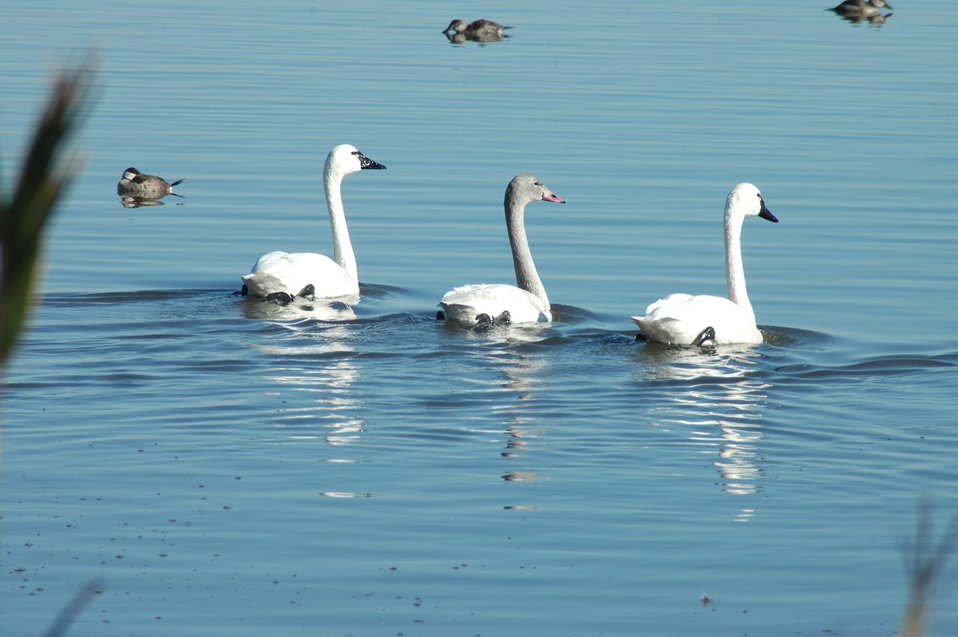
Three Swans

Enjoying a swim at Mattamuskeet National Wildlife Refuge.